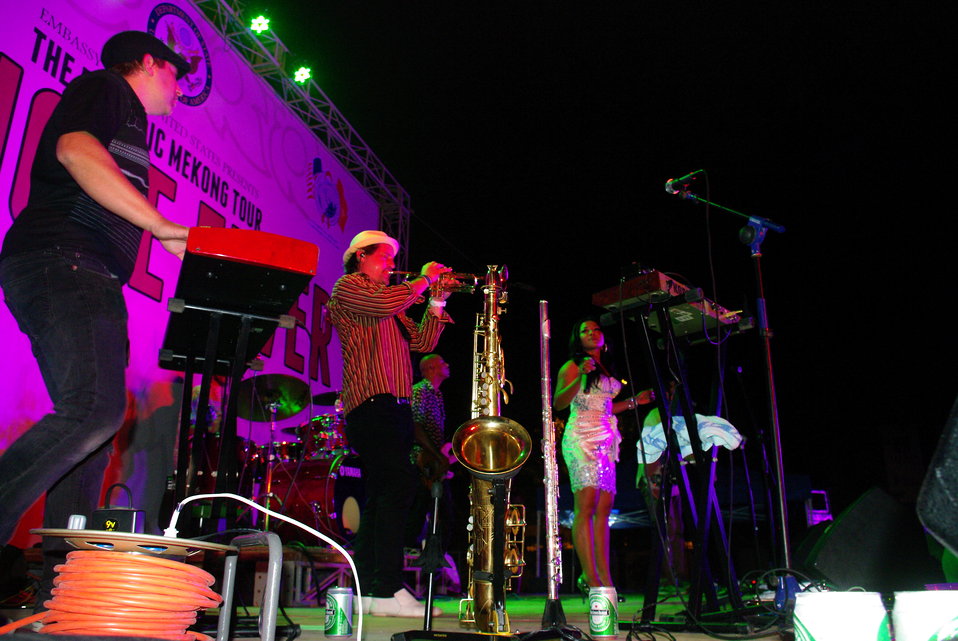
PEPFAR, U.S. Embassy Host Dengue Fever Concert in Hanoi